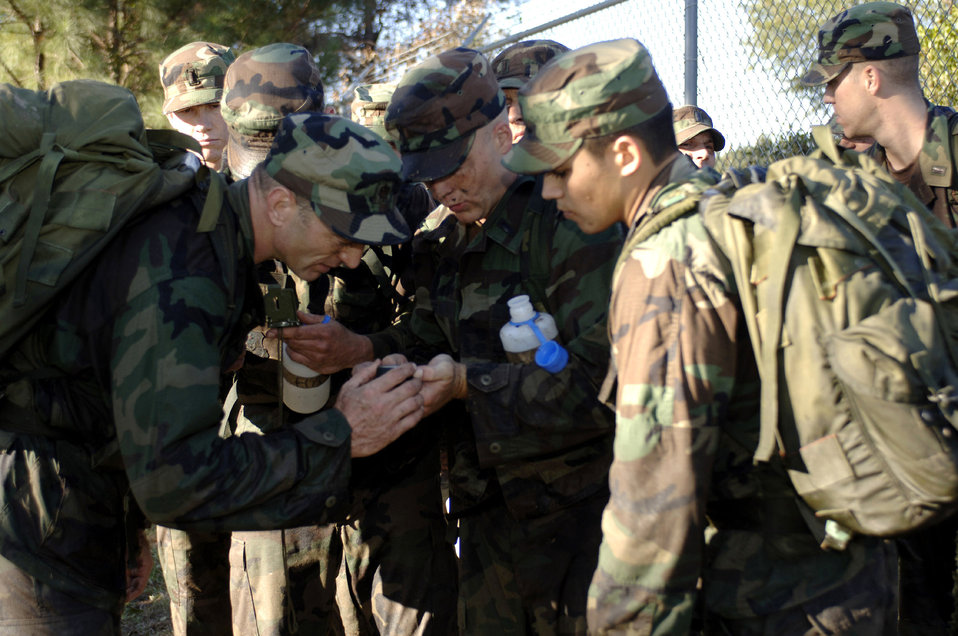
Creating CROs

MOODY AIR FORCE BASE, Ga. (AFPN) -- Combat rescue officer candidates demonstrate their abilities to utilize a global positioning system device during a CRO selection board. They were given the task of finding litters scattered throughout the woods of the base's fitness trail.